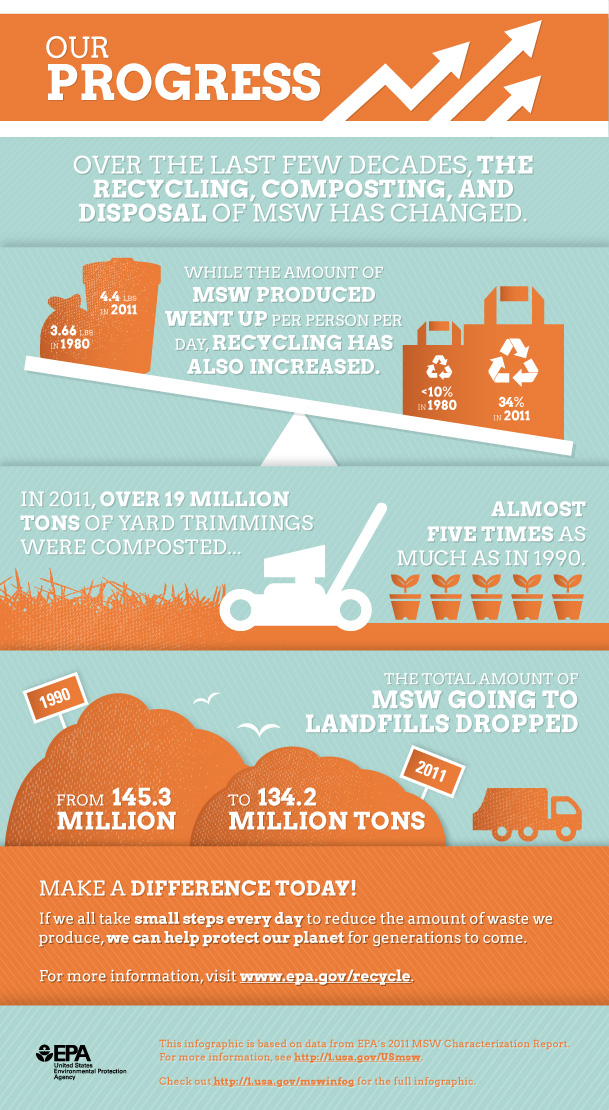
Our Progress

We’ve made great leaps and strides in pumping up our recycling and composting efforts from 30 years ago, but there is much more we can do! More than 60% of our trash still ends up in landfills or burned for energy recovery, when much of it can be reduced, reused, recycled, or composted.

Find out what you can do: www.epa.gov/waste/wycd

Data based on the full 2011 Municipal Solid Waste Characterization Report: go.usa.gov/bPxY

version of this infographic: go.usa.gov/bPcA